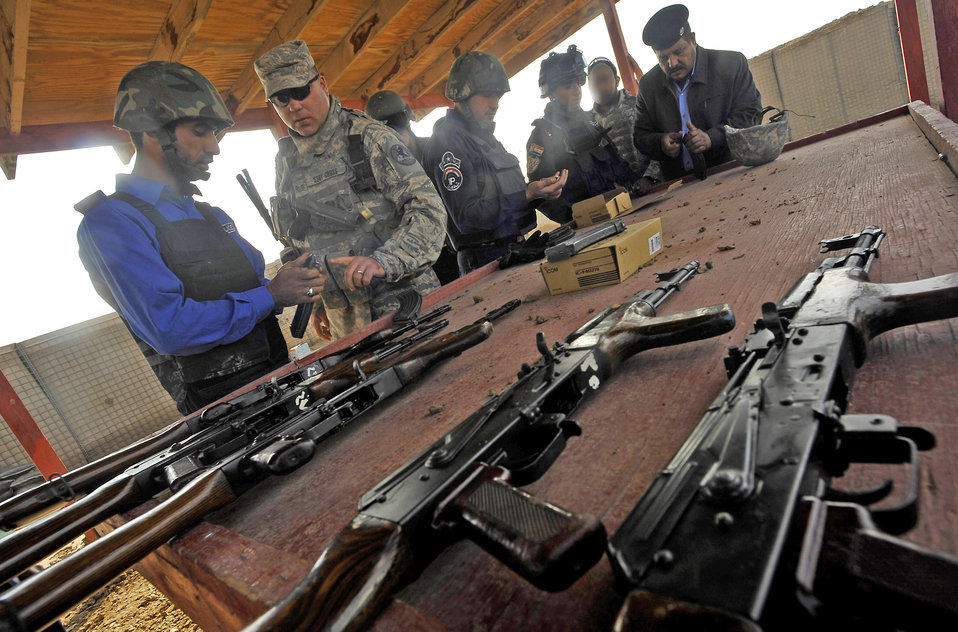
Airmen lead training course for Iraqi police

Staff Sgt. Timothy Cross mentors an Iraqi police officer at a firing range, Nov. 18, 2009, Nov. 21, 2009, in Baghdad, Iraq. Sergeant Gomez is assigned to the 732nd Expeditionary Security Forces Squadron Det. 2.